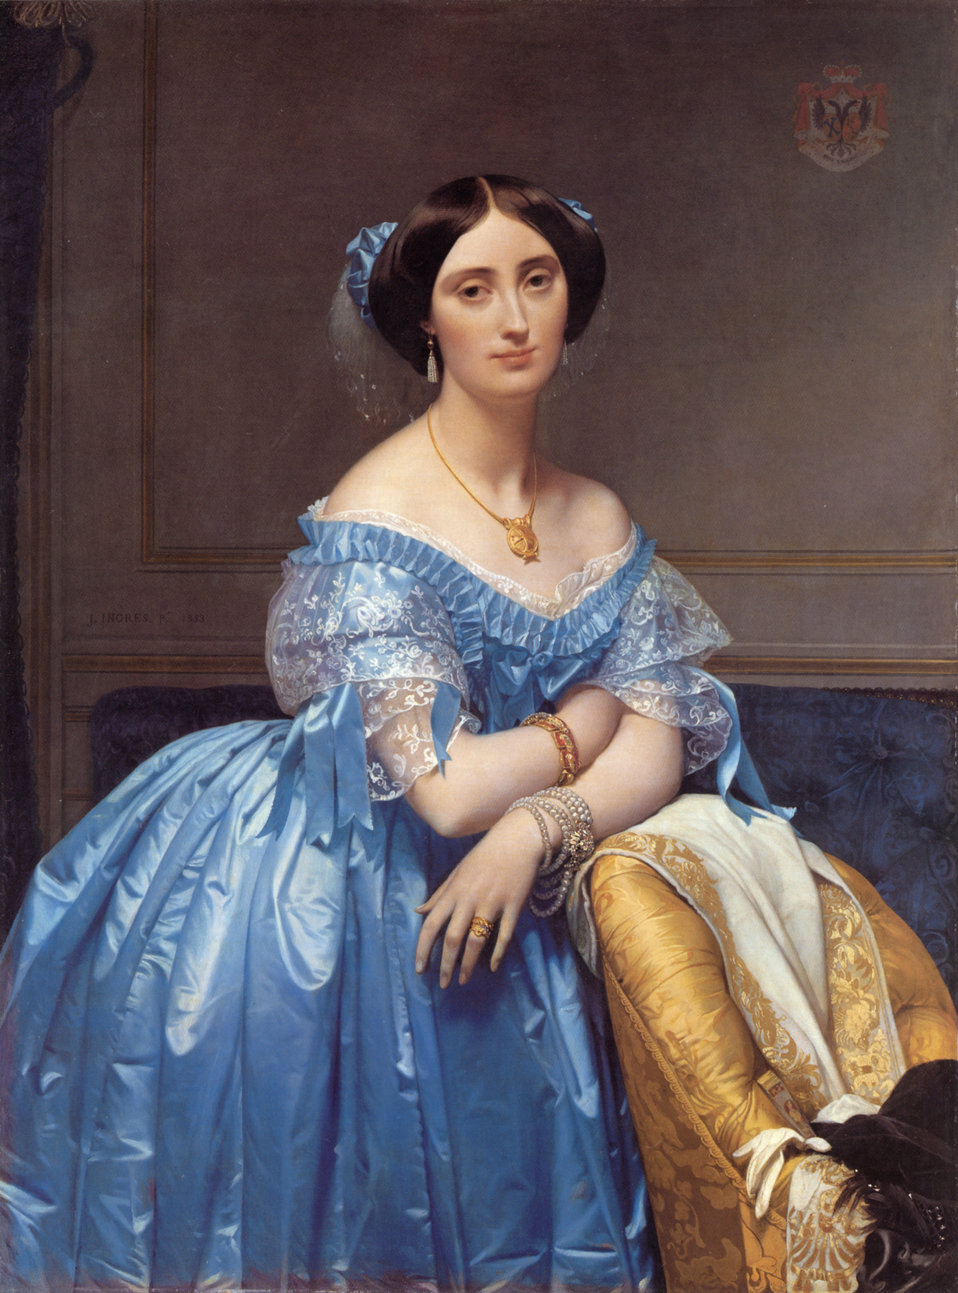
Jean auguste dominique ingres princesse albert de broglie